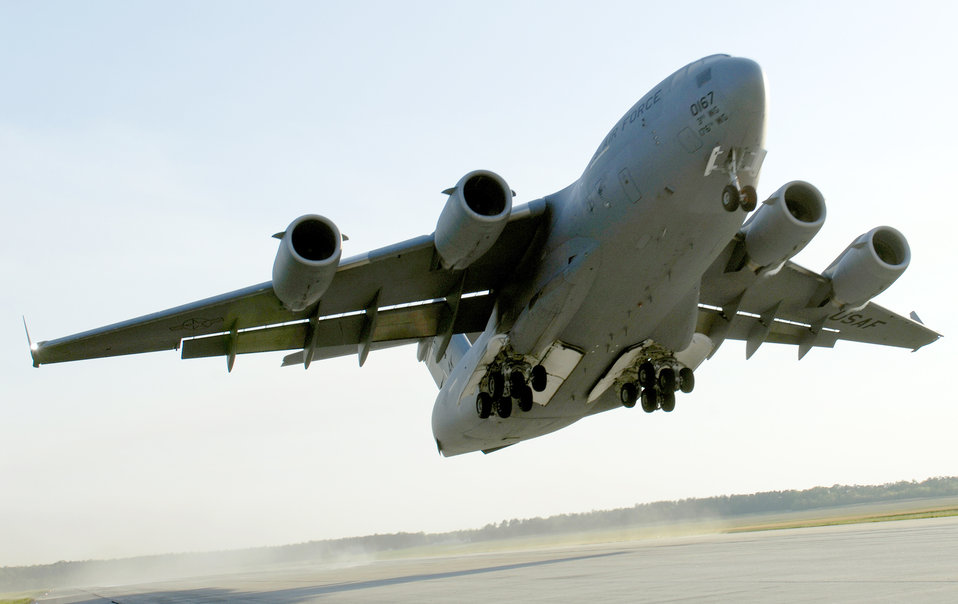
Let's go

A C-17 Globemaster III takes off April 15, 2010, from Fort Pickett Maneuver Training Center, Va. The aircraft, carrying a group of Navy SEALs, was part of a joint training exercise with members of the 517th Airlift Squadron from Elmendorf Air Force Base, Alaska and SEAL Team 10.